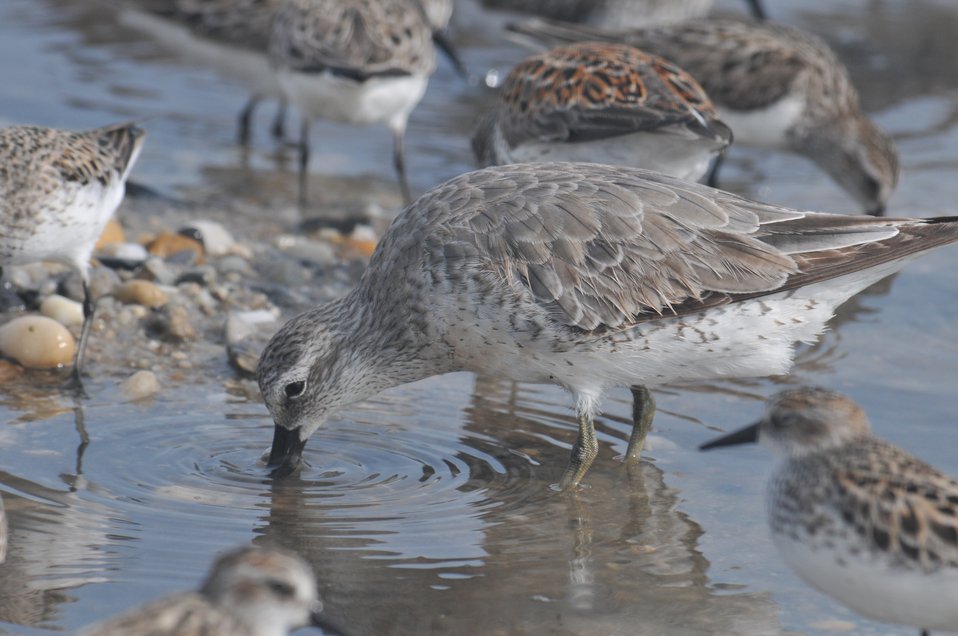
Red Knot

Mispillion Harbor, Delaware.